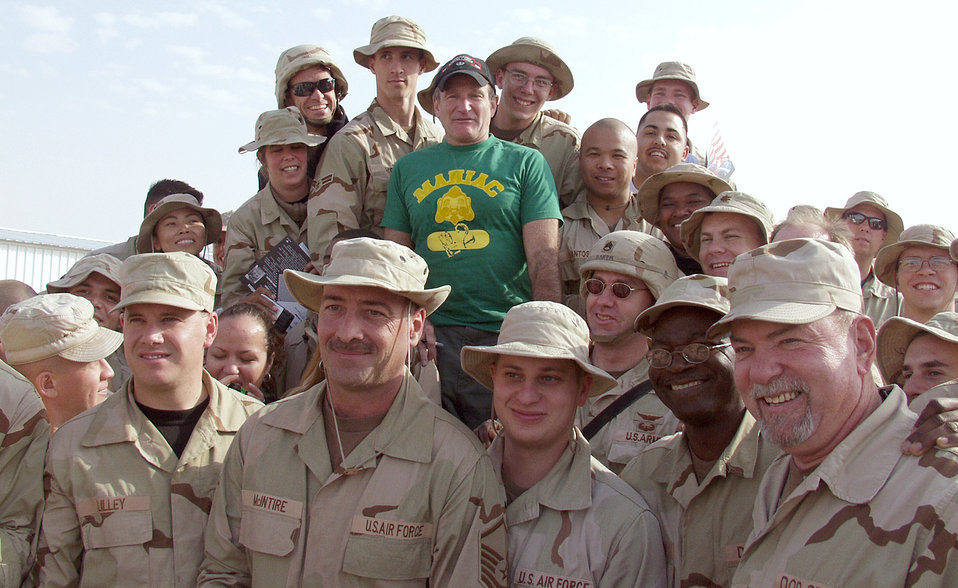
Stars tour Iraq for holidays

KIRKUK AIR BASE, Iraq -- Academy Award-winning actor and comedian Robin Williams is surrounded by military admirers following a holiday-tour stop here Dec. 17. Williams and other celebrities are visiting military forces, along with Gen. Richard B. Myers, chairman of the Joint Chiefs of Staff, as part of a United Service Organizations-sponsored tour.